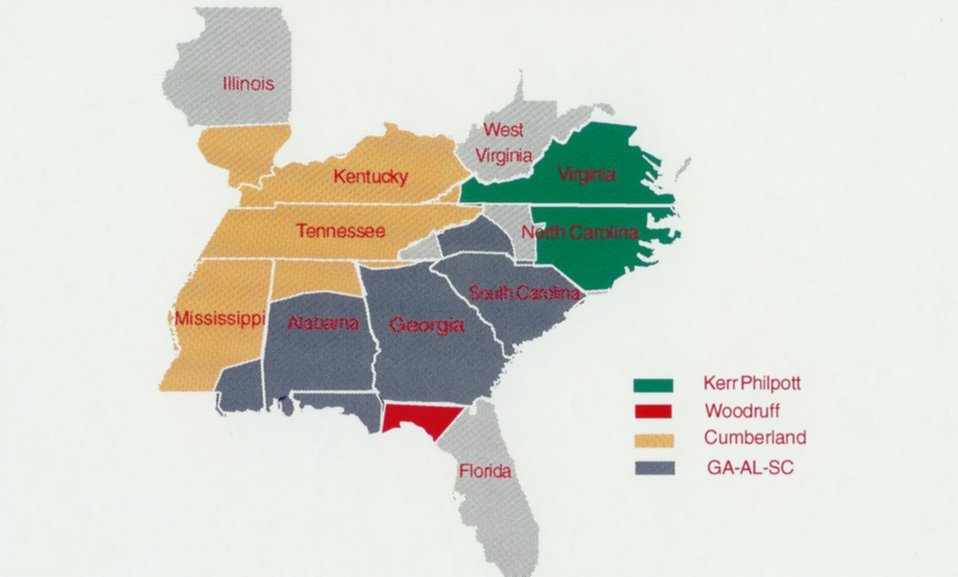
SEPAmarketingarea

This is the power marketing area for Southeastern Power Administration.